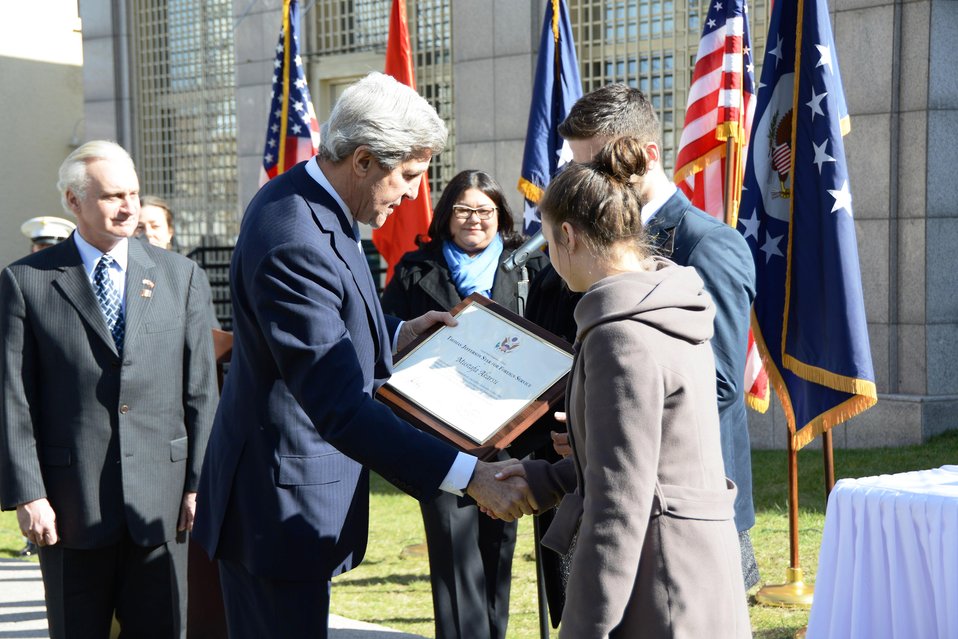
Secretary Kerry Presents an Award to Embassy Guard Akarsu's Family

U.S. Secretary of State John Kerry presents an award to the family of Embassy guard Mustafa Akarsu at a Memorial Ceremony at the U.S. Embassy in Ankara, Turkey, on March 1, 2013.